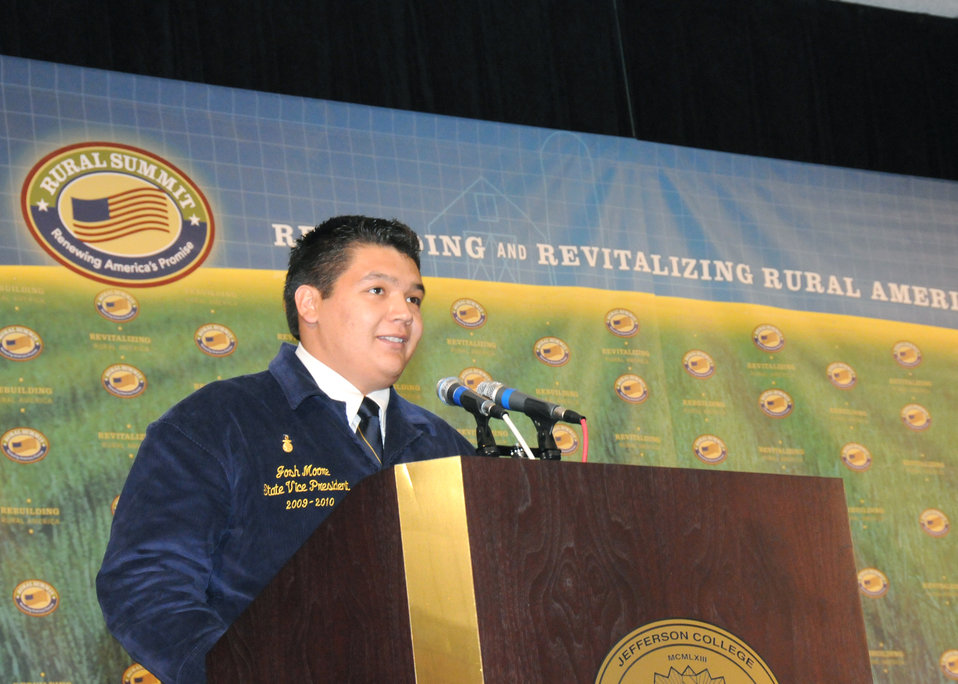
FFA Arizona State Vice President Josh Moore speaks at the National Rural Summit held at Jefferson College in Hillsboro, MO., on Thursday, June 3, 2010. USDA photo 10di1387-18